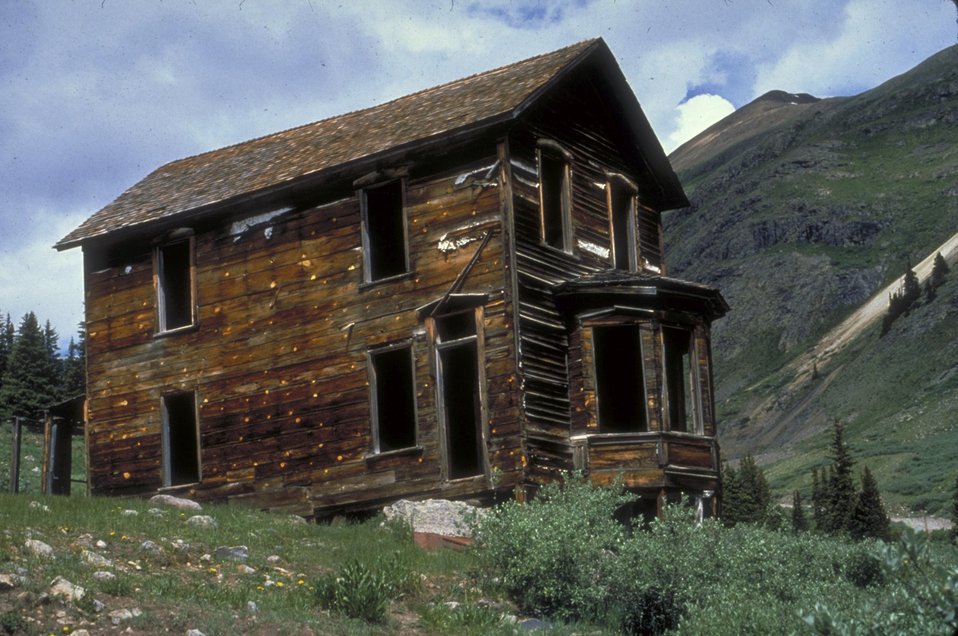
Historic structure at Animas Forks ghost town along the Alpine Loop National Back Country Byway.